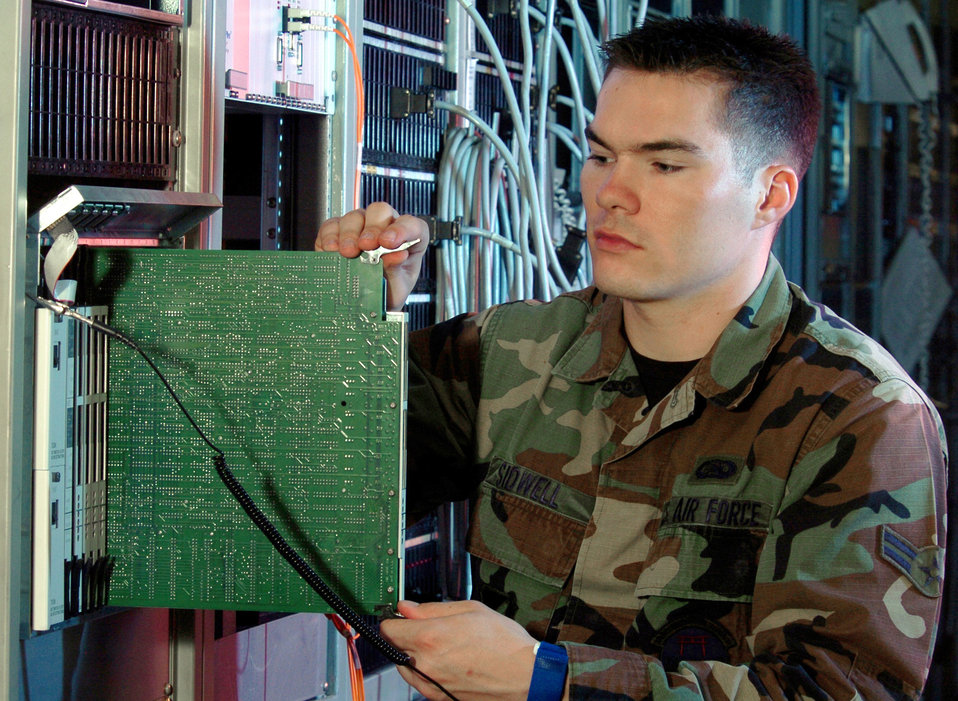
Communication techs ensure message gets through

YOKOTA AIR BASE, Japan (AFPN) -- Airman 1st Class Larry Sidwell installs equipment here. He and other systems control technicians from the 374th Communications Squadron maintain systems and equipment on 42 sites across mainland Japan.